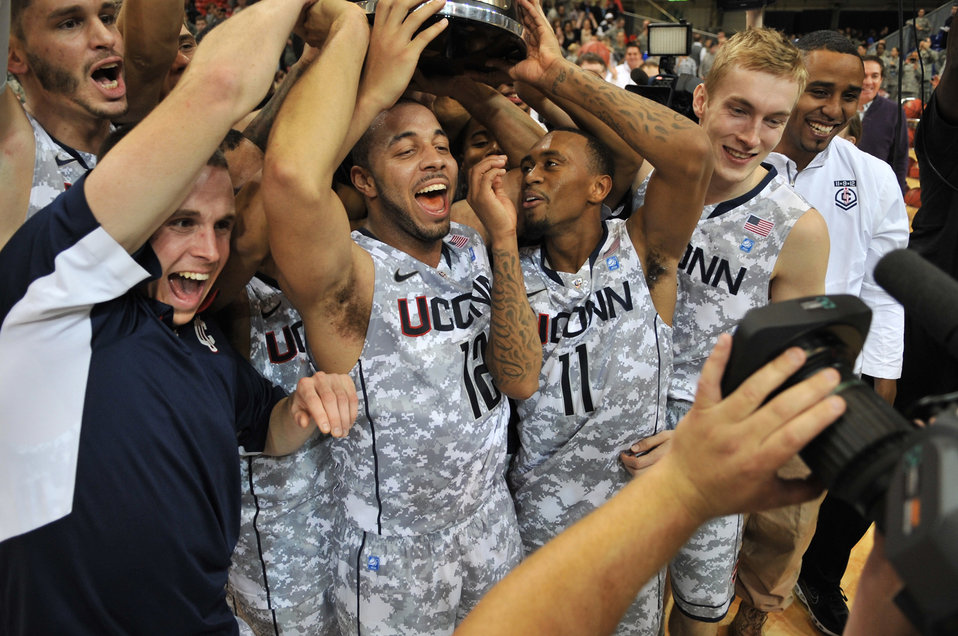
Armed Forces Classic

University of Connecticut players celebrate their victory over Michigan State during the Armed Forces Classic basketball at Ramstein Air Base, Germany, Nov. 10, 2012. Connecticut overcame Michigan 66-62.